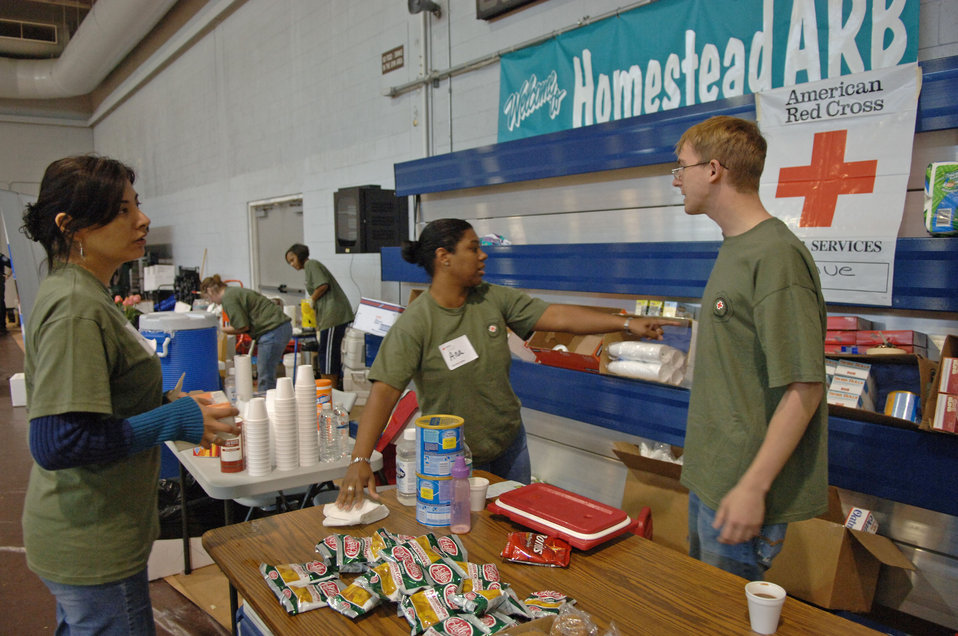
Operation Unified Response

Red Cross volunteers prepare food and snacks for evacuees from Haiti, Jan. 19, 2010, at Homestead Air Reserve Base, Fla. The Red Cross has already supported more than 1,500 evacuees being transported through Homestead ARB.